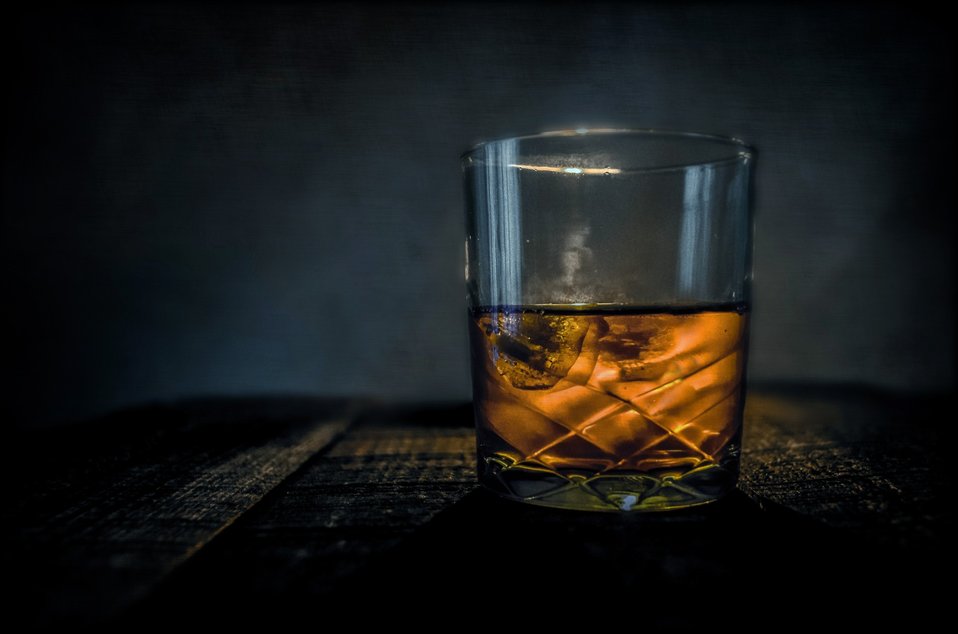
Scotch on wooden background.